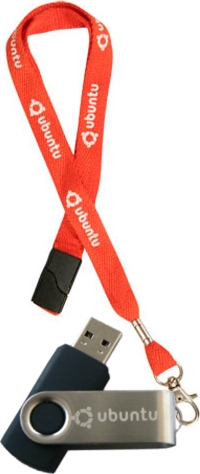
Ubuntu USB lanyard